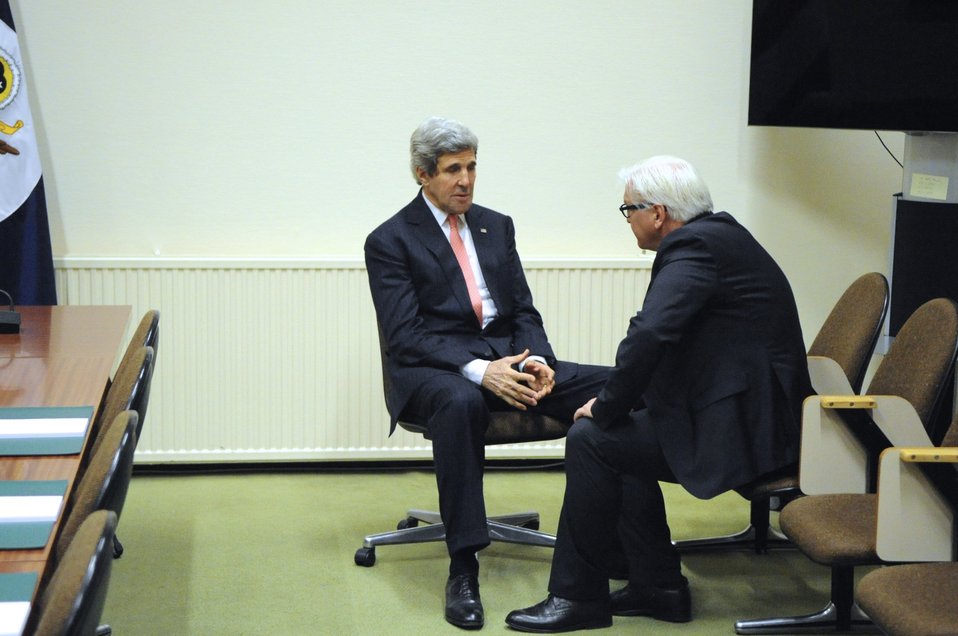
Secretary Kerry Meets With German Foreign Minister Steinmeier in Brussels

U.S. Secretary of State John Kerry shakes hands with German Foreign Minister Frank-Walter Steinmeier before a meeting on the sidelines of a NATO Ministerial Meeting in Brussels, Belgium, on April 2, 2014.